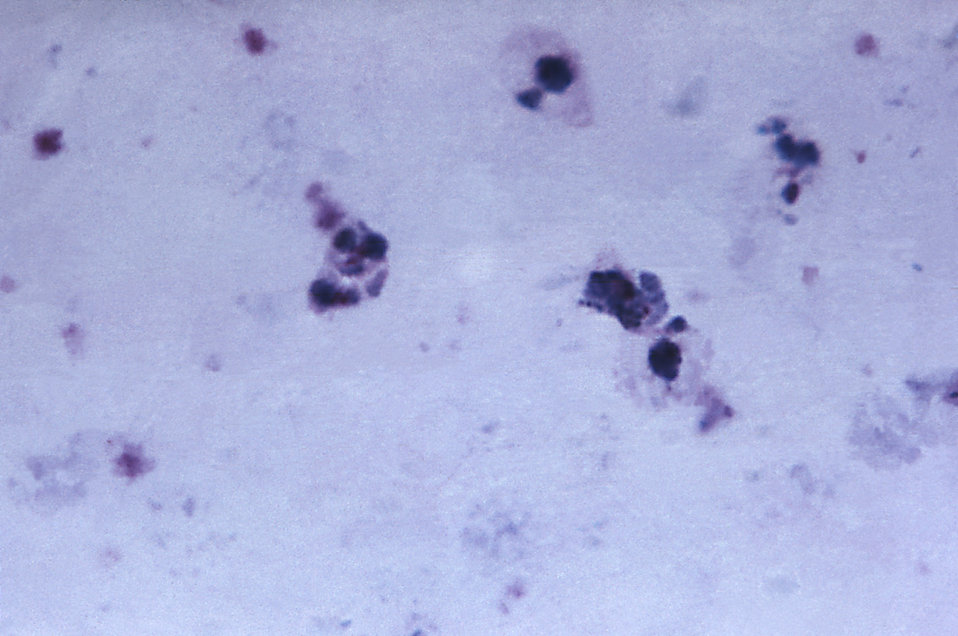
This thick film micrograph depicts an old P. vivax ameboid trophozoite and visible Schuffners' dots, Magnified 1125X.